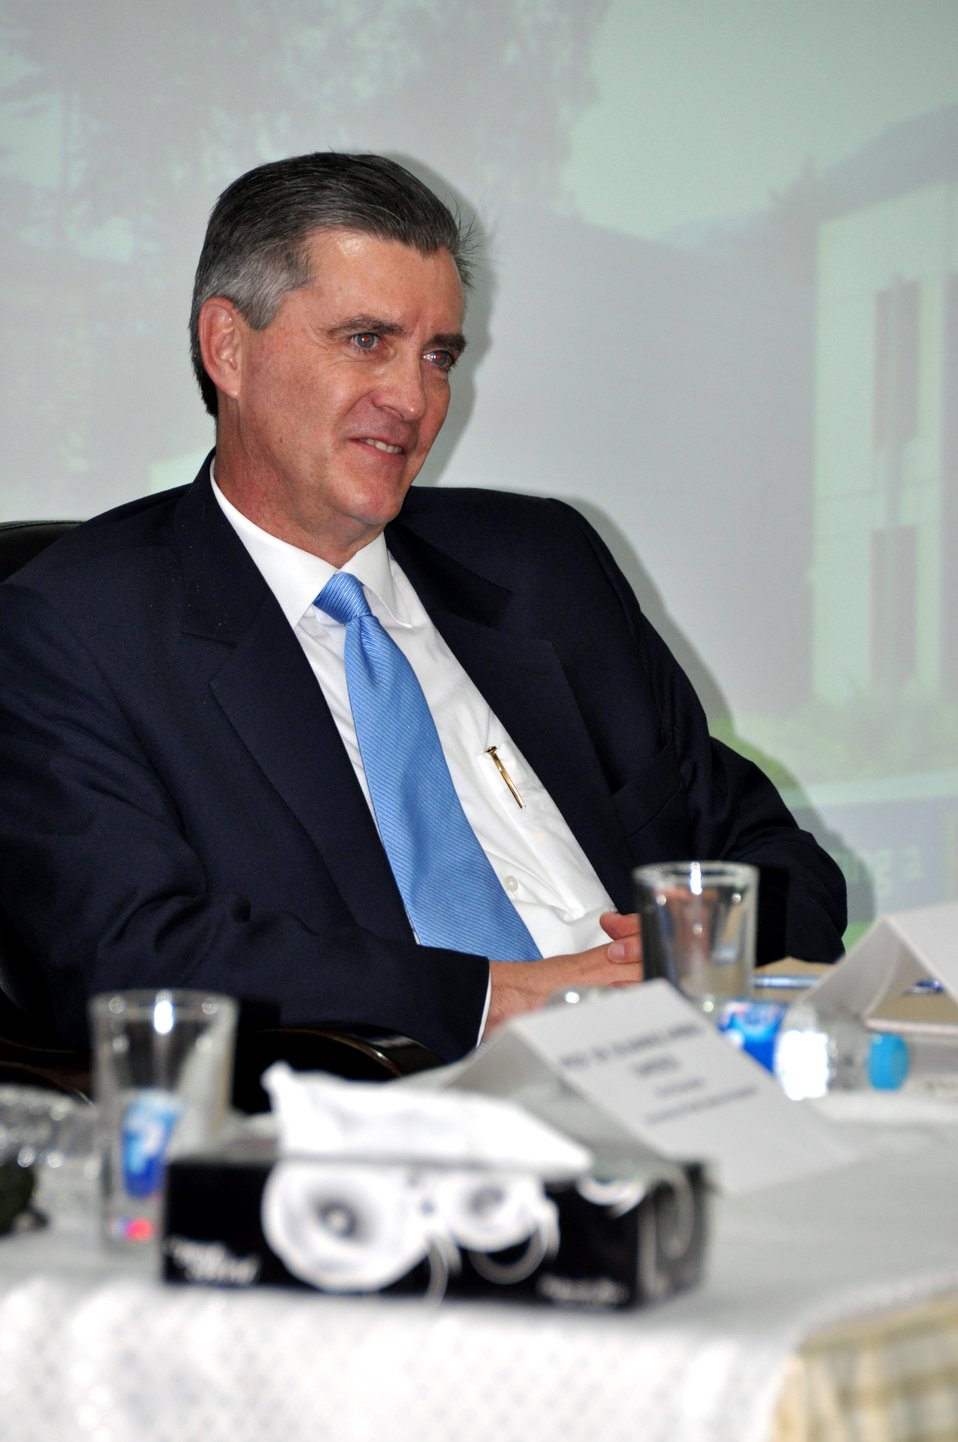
The United States Ambassador to Pakistan, Richard Olson broke ground for a U.S. funded construction of a new Faculty of Education building in Muzaffarabad, AJK. 12